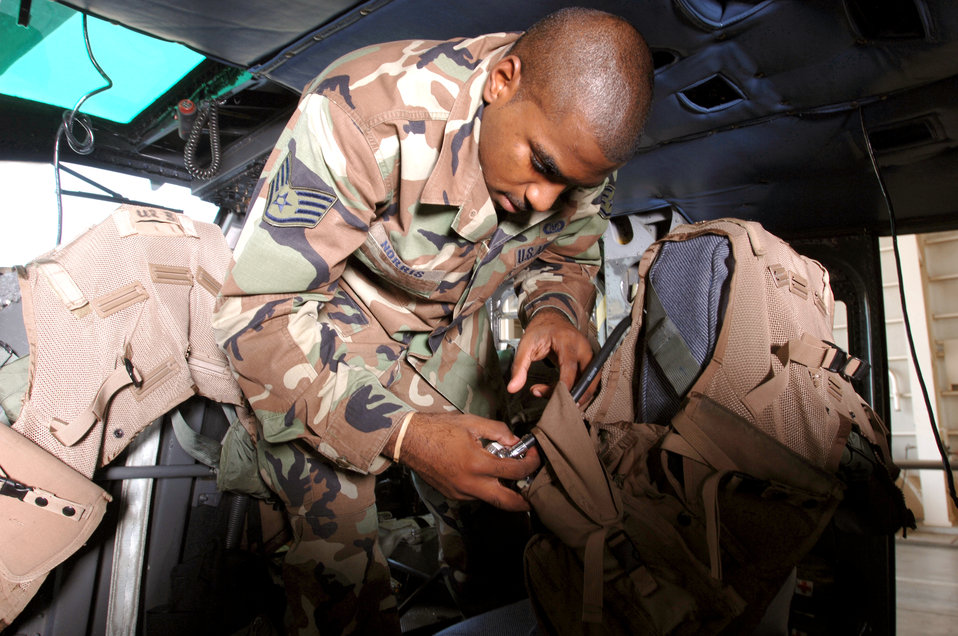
Pacific life support

YOKOTA AIR BASE, Japan -- Staff Sgt. Raymond Norris inspects life preservers inside a UH-1N Huey helicopter before an overwater mission. Life-support technicians also provide life rafts, survival vests, survival kits and emergency breathing system equipment for helicopter aircrew. Sergeant Norris is assigned to the 459th Airlift Squadron here.